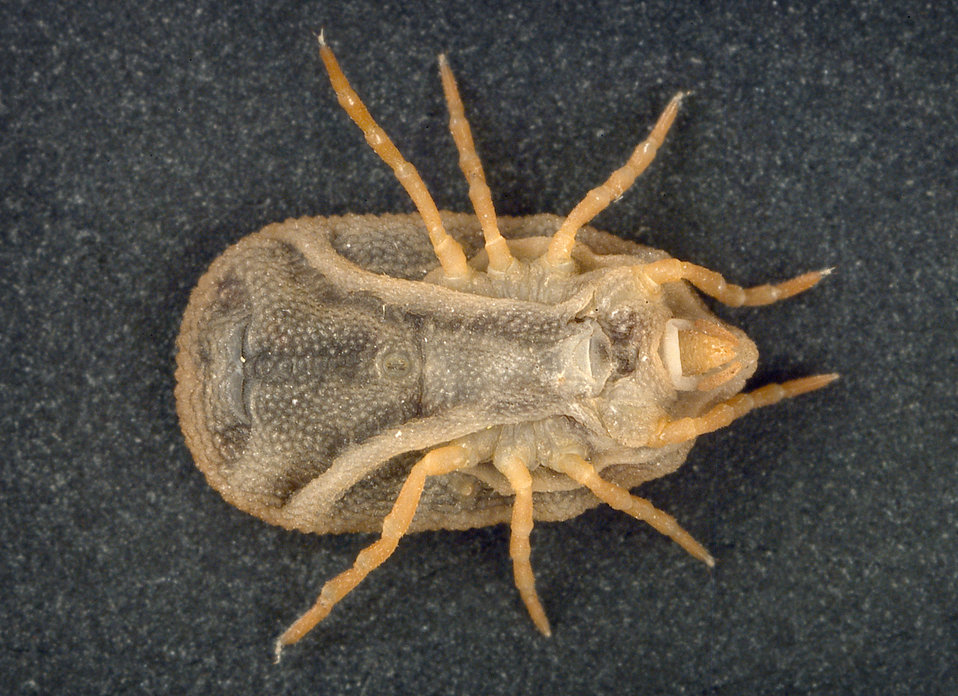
This is a ventral view of the 'soft tick' Carios kelleyi, formerly Ornithodoros kelleyi, or the 'Bat Tick'.